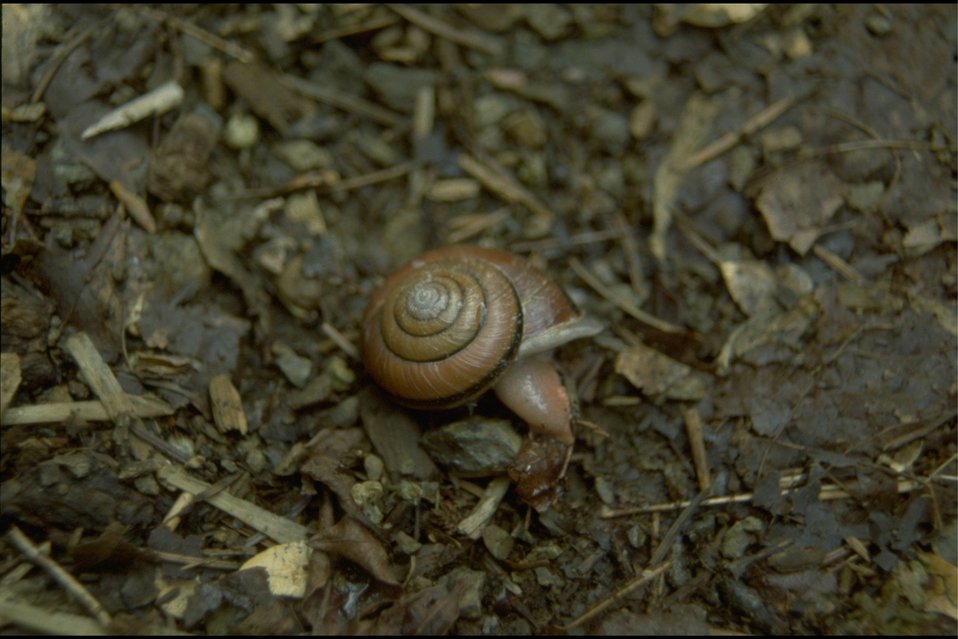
Rogue River - Snail on Rogue River trail.